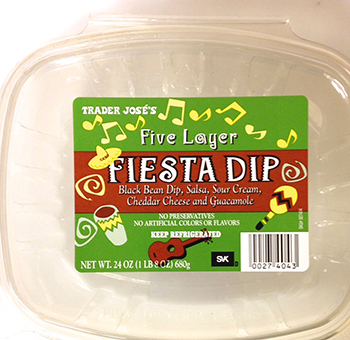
RECALLED – Hummus and dip products

May 19, 2014 – Product Recall – Lansal, Inc. Voluntarily Recalls Hummus & Dip Products Due to Possible Health Risk.